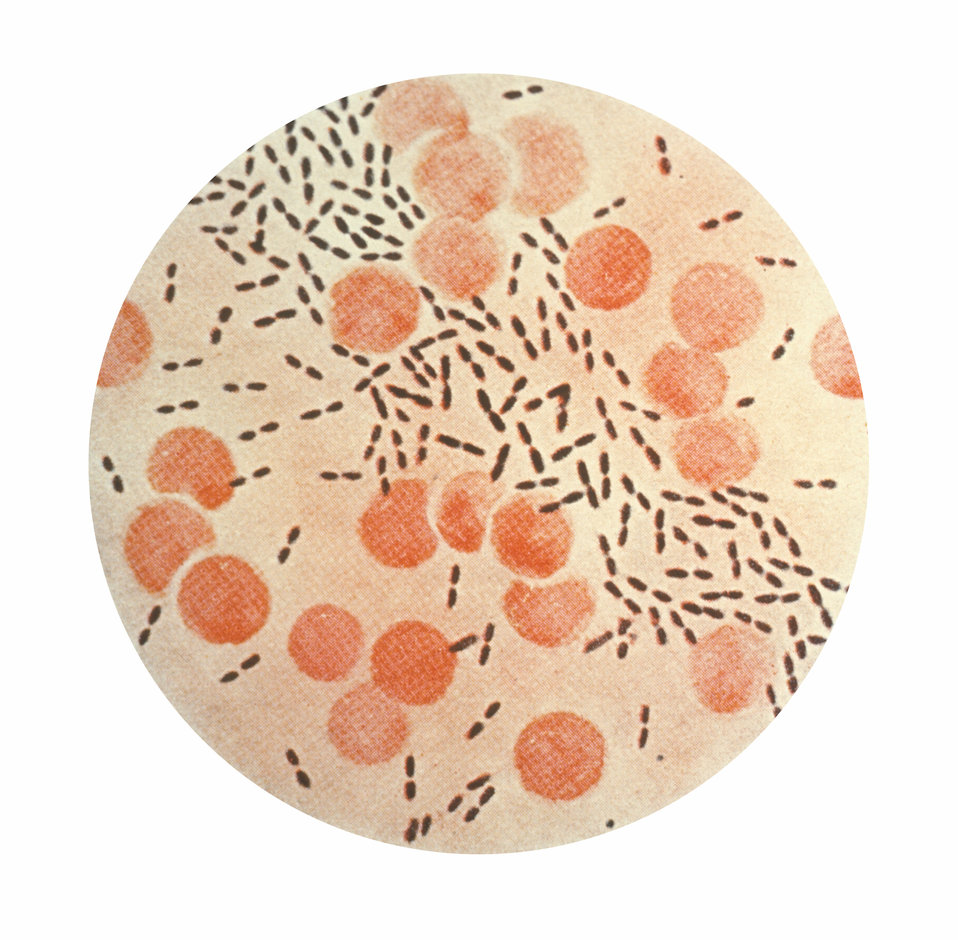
Photomicrograph of Streptococcus (Diplococcus) pneumoniae bacteria, using Gram stain technique.